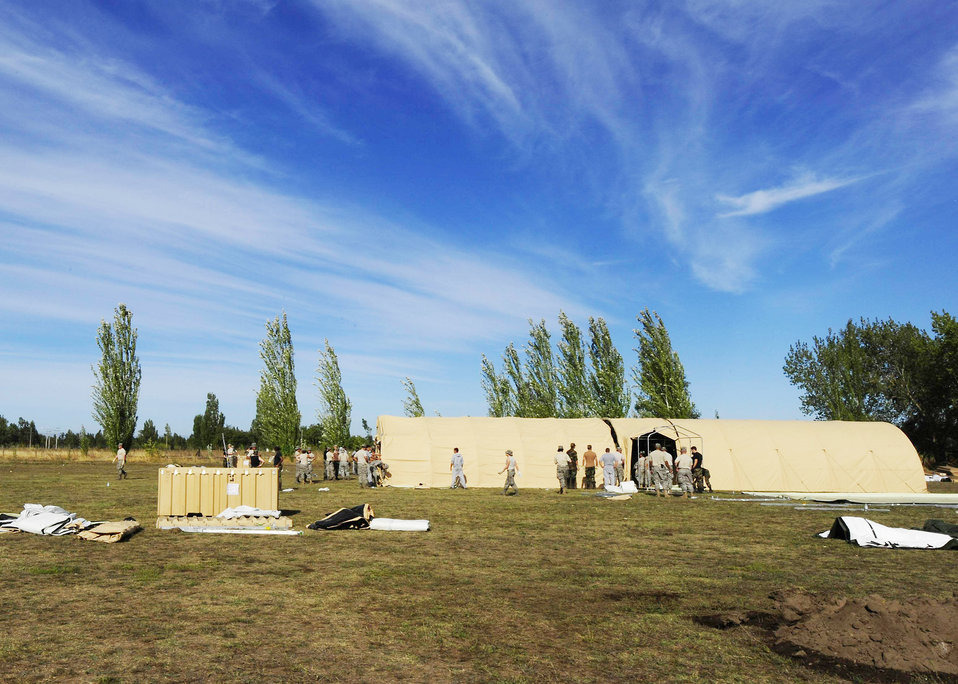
Airmen build hospital in Chile

Airmen from an Air Force Expeditionary Medical Support team along with members of the Chilean army finish building a mobile hospital March 10, 2010, in Angol, Chile. The EMEDS team is equipped and staffed to provide surgical, primary care, pediatric, radiological, gynecological, laboratory, pharmaceutical and dental services.